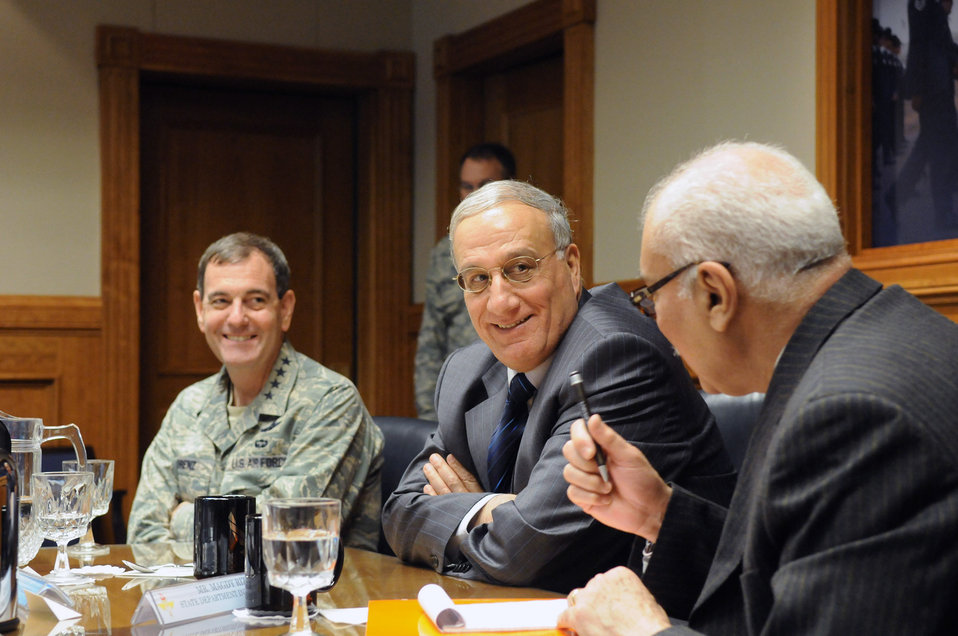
Iraqi Minister of Defense discusses military, political landscape

Iraqi Minister of Defense Abdul Qader Mohammad Jassim Al-Mafrji and Gen. Stephen R. Lorenz, Air Education and Training Command commander, speak through an interpreter during a briefing Feb. 18 about the training AETC can provide to the Iraqi air force.